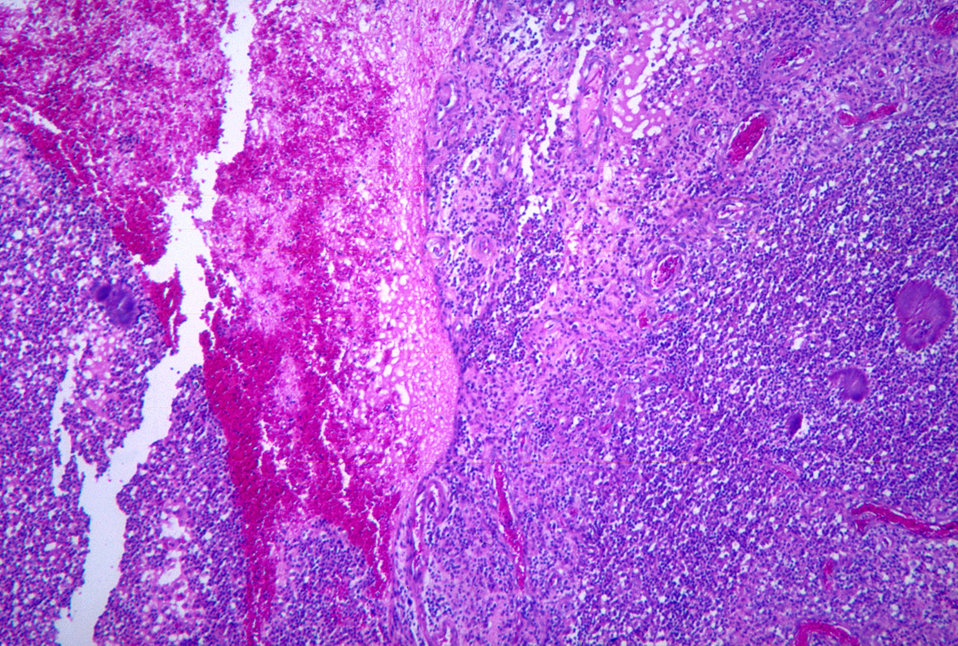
This micrograph depicts the histopathologic changes associated with actinomycetoma of the foot.